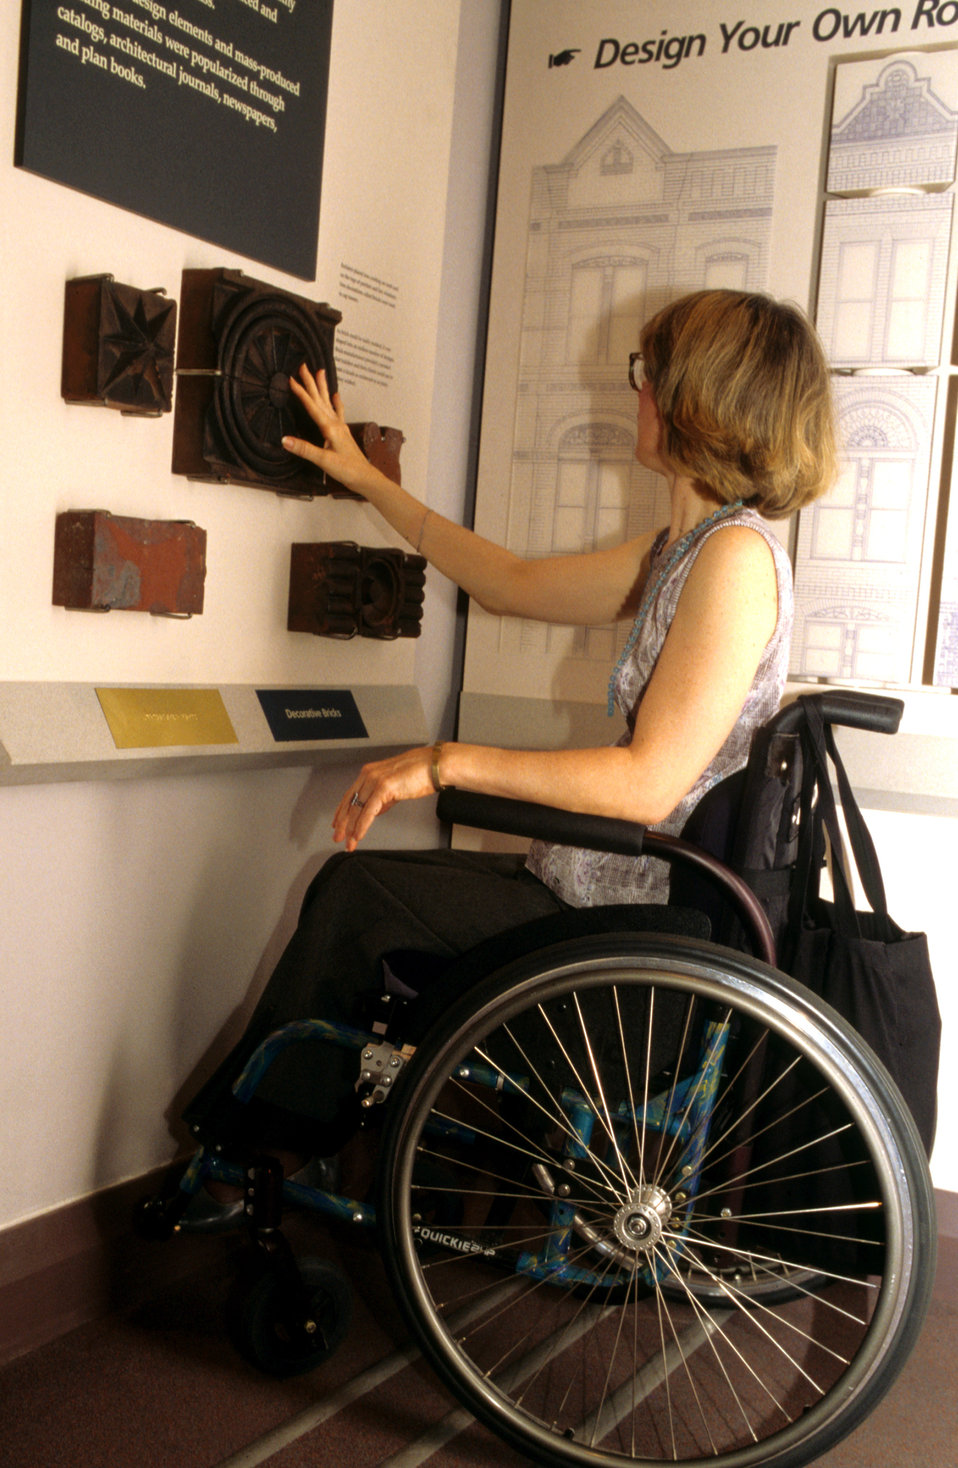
This was the sixth in a series of eight images (PHIL# 9088 - 9095) revealing the exhibits inside the U.S. National Building Museum, all of which could be touched by all visitors, including adults, children, and especially those who were mobility, or visually impaired. Consideration paid to those with such impairments during the designing of this facility, enhanced the enjoyment experienced by all participants, as well as their overall learning experience. Mounted so standing, or seated users could fully appreciate their visit, the exhibits included Braille descriptions, large print signs. Here, a mobility-challenged woman seated in her wheelchair was touching an exhibit highlighting architectural elements, i.e., bricks, moldings, etc. 'The Center for Universal Design (CUD) is a national research, information, and technical assistance center that evaluates, develops, and promotes accessible and universal design in housing, buildings, outdoor and urban settings and related products.'